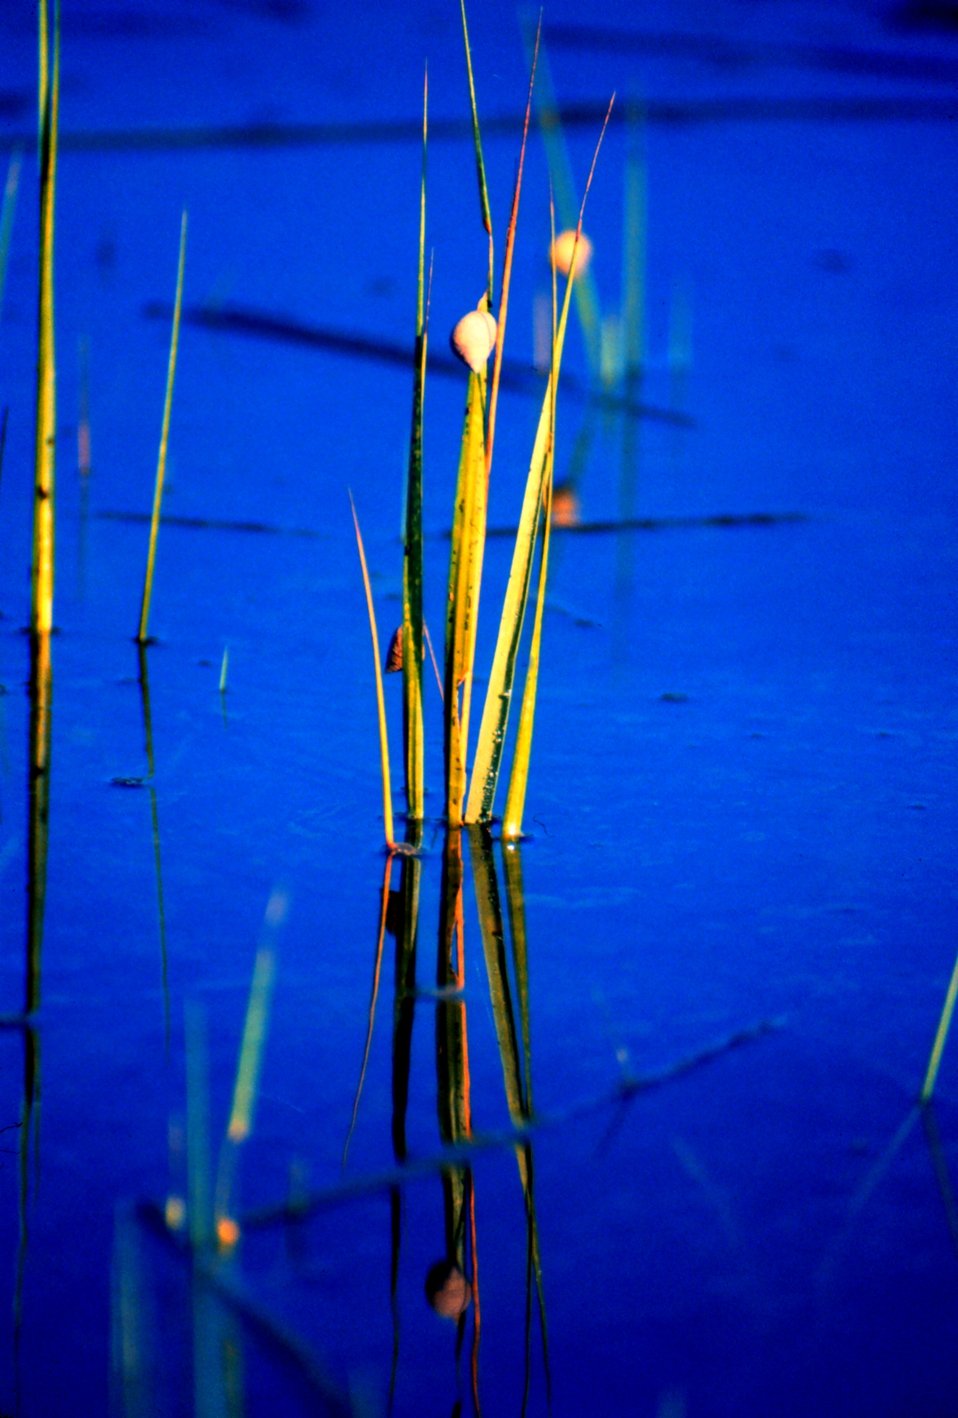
North Inlet - Winyah Bay National Estuarine Research Reserve. Cordgrass plant nearly covered at high tide. Note the periwinkle snail, Littorina irrorata, that has climbed high on the grass blade and avoided being covered by the tide.